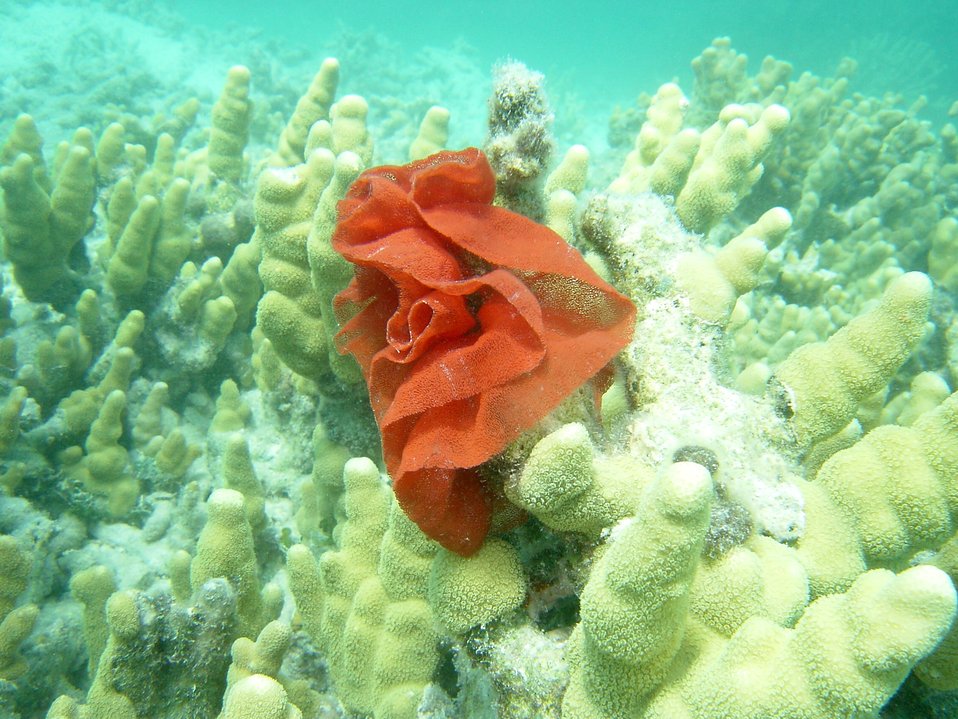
Spanish dancer nudibranch (Hexabranchus sanguineus) eggs.